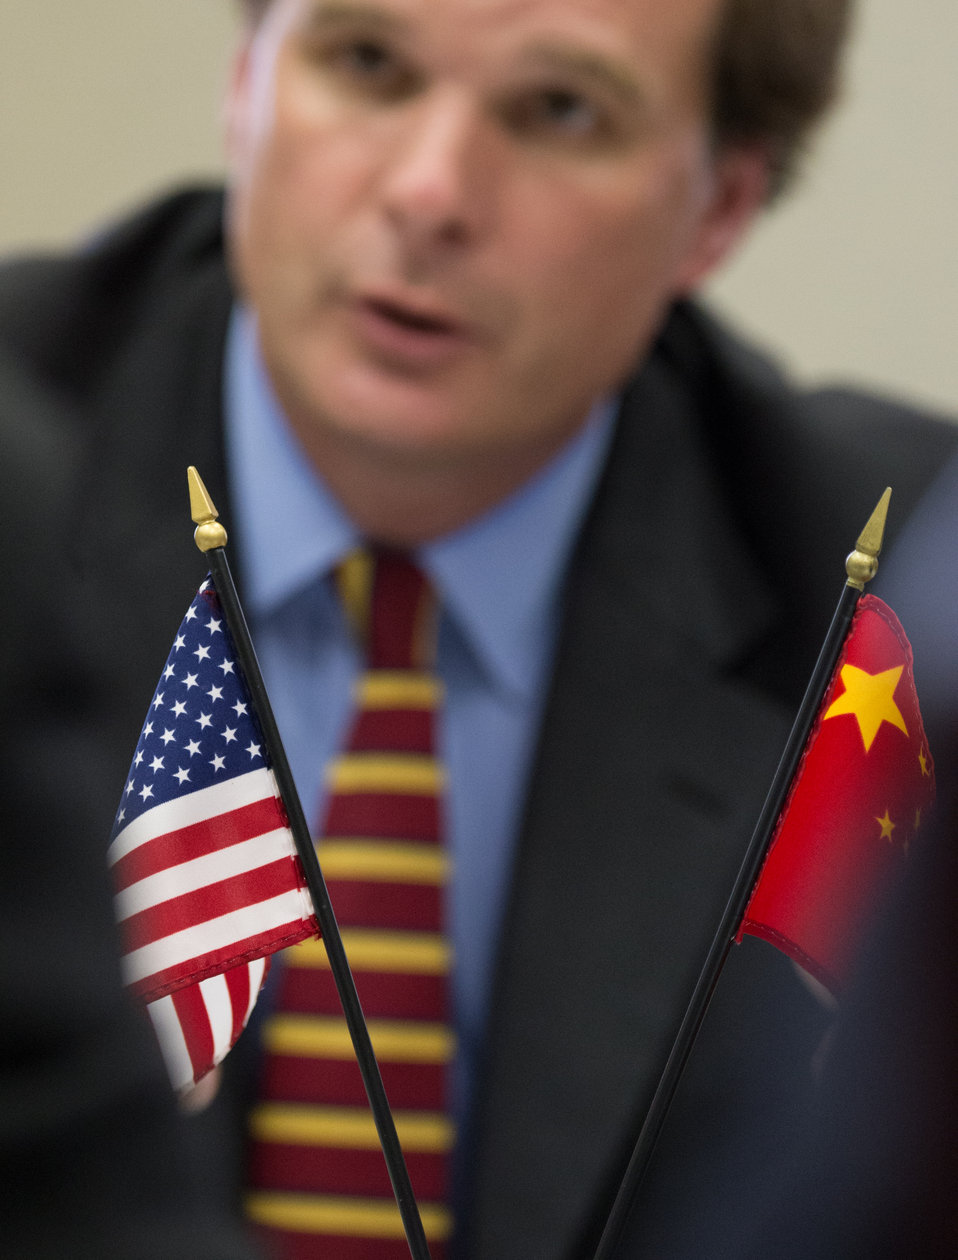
U.S. Department of Agriculture (USDA) Under Secretary for Natural Resources and Environment (NRE) Robert Bonnie and other USDA leaders meeting with The People’s Republic of China Ministry of Agriculture (MOA) Vice Minister H.E. Zhang Taolin, who heads the Chinese Agricultural Delegation meeting at the USDA headquarters Whitten Building, in Washington, D.C., on Friday June 13, 2014.